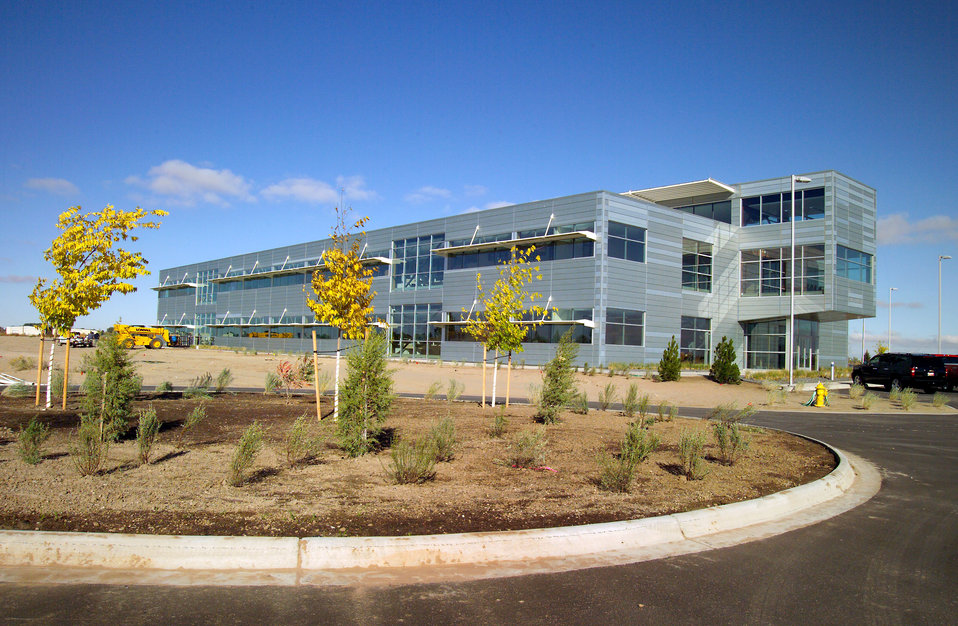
The Center for Advanced Energy Studies, a partnership among Idaho National Laboratory and Idaho's public universities, will promote energy research collaborations.